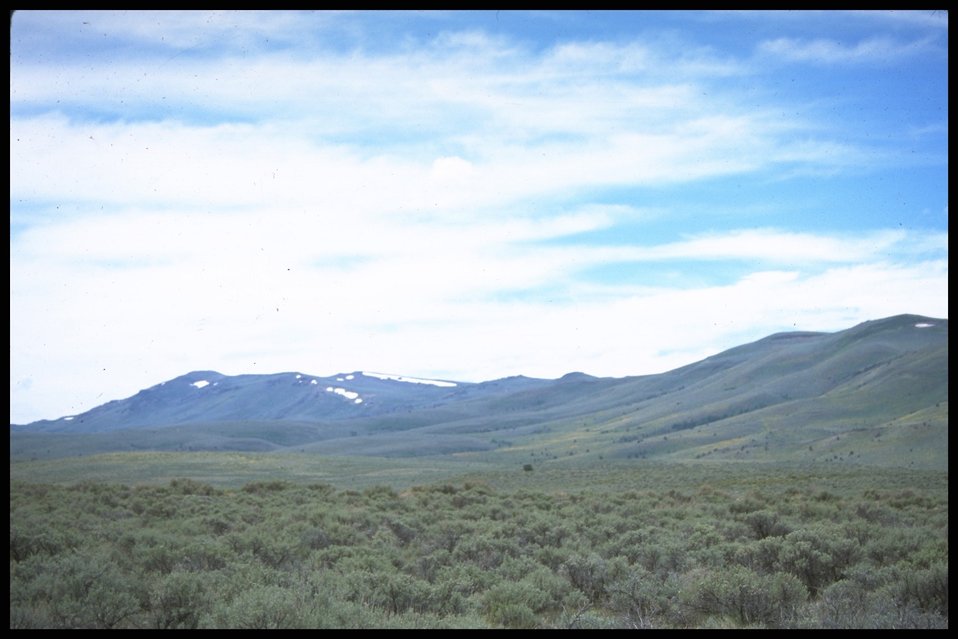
Scenic view of Hart Mountain, Lakeview District.